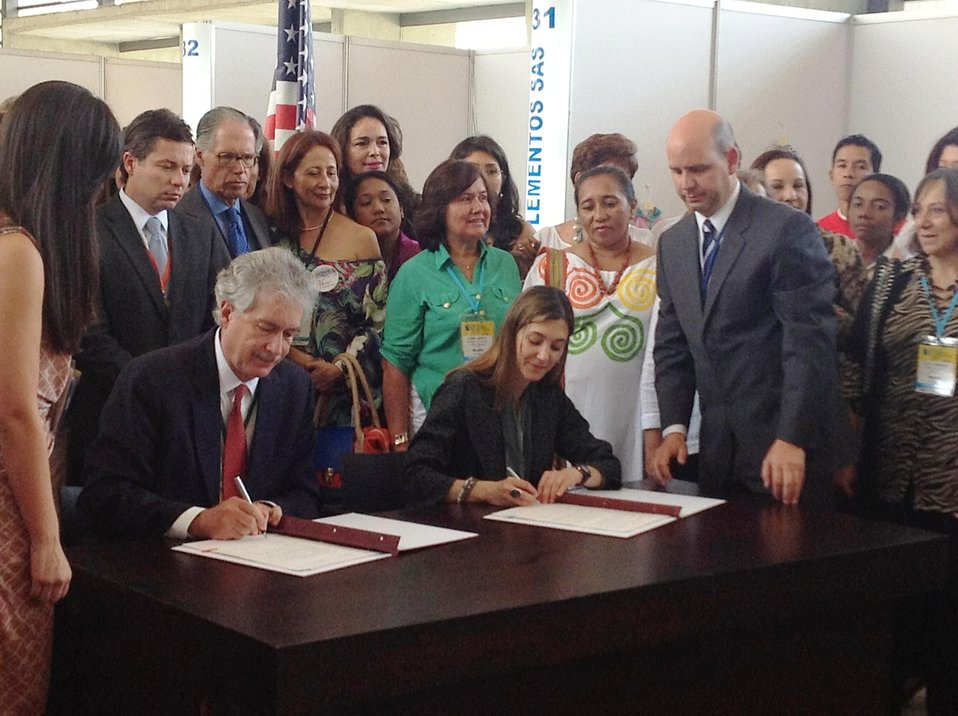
Deputy Secretary Burns and Colombian Vice Foreign Minister Londono Sign a Memorandum of Understanding

Deputy Secretary of State William Burns and Colombian Vice Foreign Minister Patti Londono sign a memorandum of understanding on the Small Business Network of the Americas on the sidelines of the Pathways to Prosperity in the Americas ministerial in Cali, Colombia, October 23, 2012.